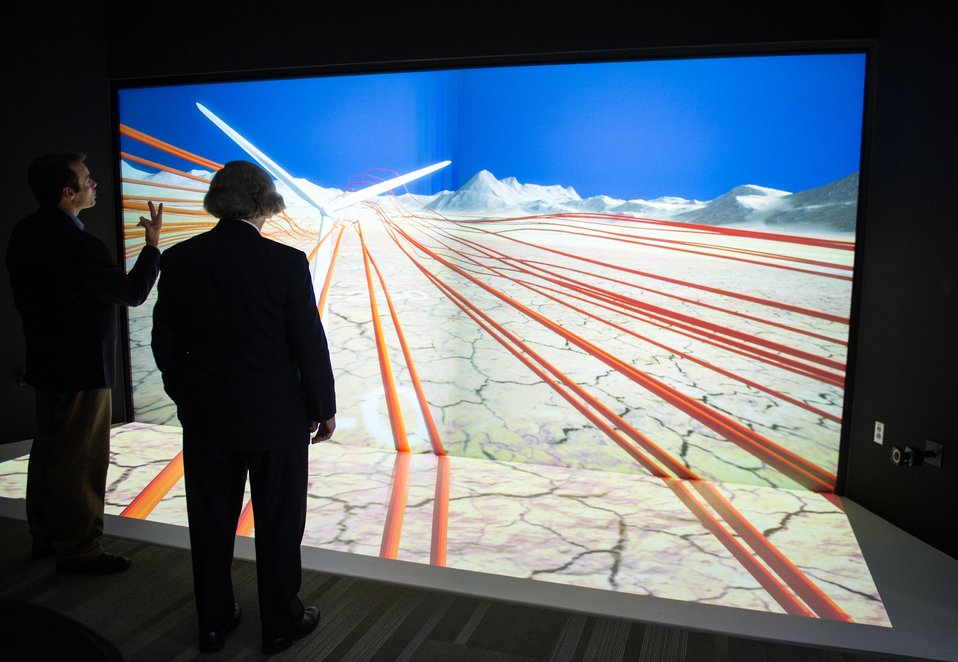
NREL SCIENTIST KENNY GRUCHALLA, LEFT EXPLAINS A WIND TURBINE MODEL AT THE INSIGHT LAB TO ENERGY SECRETARY ERNEST MONIZ DURING A TOUR FOR THE DEDICATION OF THE ENERGY SYSTEMS INTEGRATION FACILITY (ESIF).